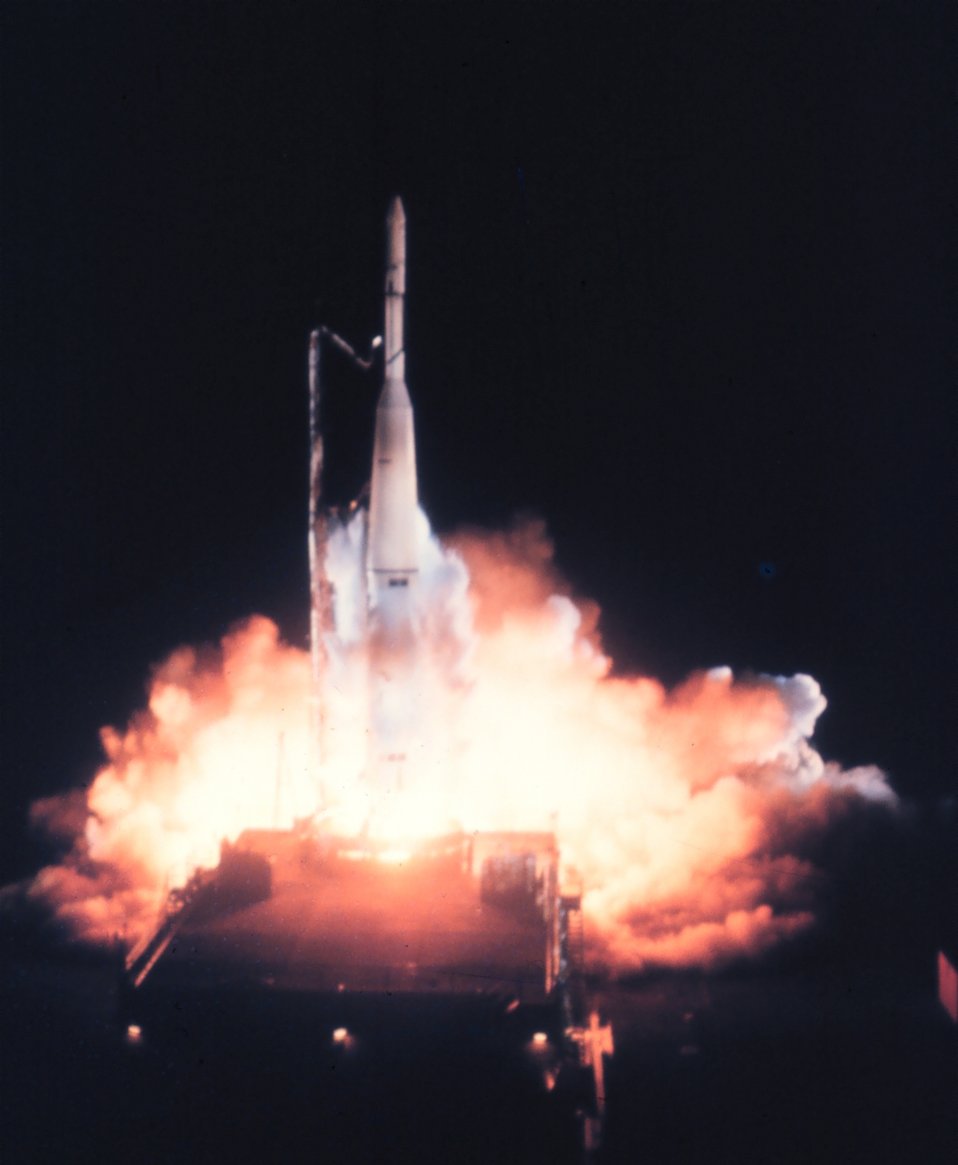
The launch of TIROS II